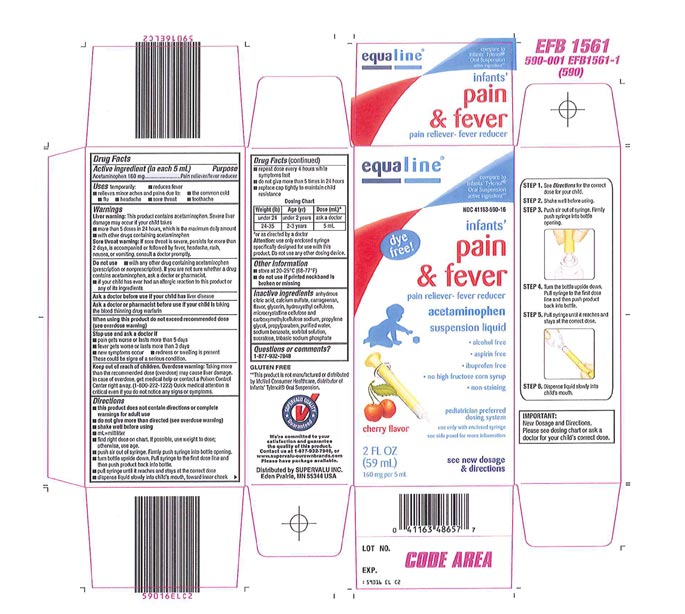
Recalled - Acetaminophen infant suspension liquid

November 1, 2013 – Product Recall – Perrigo Initiates Nationwide Voluntary Product Recall of Acetaminophen Infant Suspension Liquid, 160 Mg/5 Ml, Due to a Potential Defect with the Co-packaged Oral Syringe.